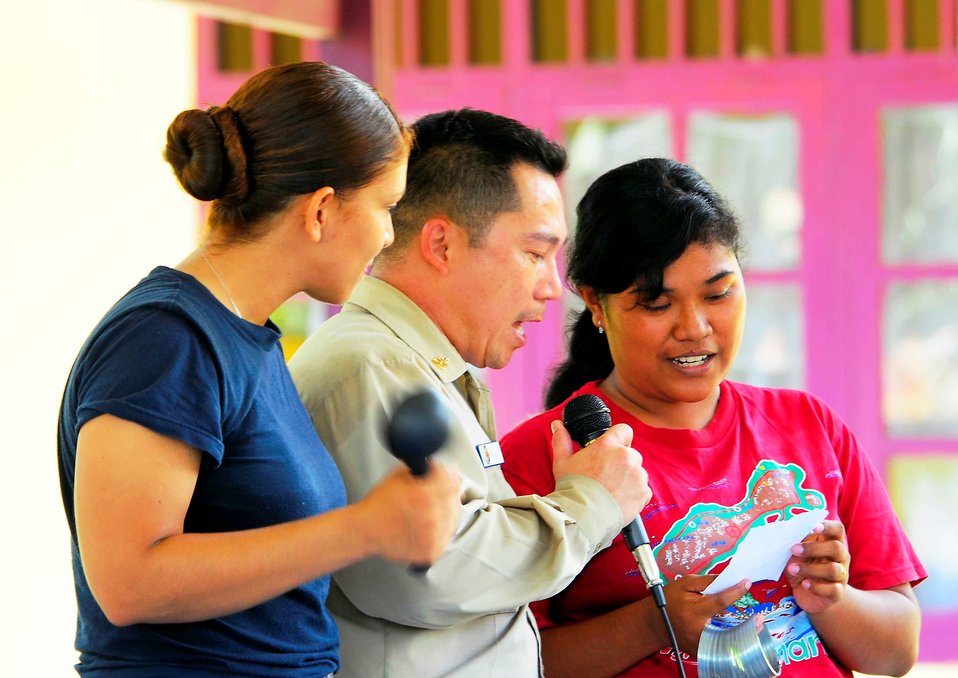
Senior Chief (SW/AW) Guy Gagui and Aviation Boatswain’s Mate Handling 1st Class (AW/SW) Yissel Castanon Sing an Indonesian Song With an Indonesian Girl

Senior Chief (SW/AW) Guy Gagui and Aviation Boatswain’s Mate Handling 1st Class (AW/SW) Yissel Castanon, both currently embarked aboard the Military Sealift Command hospital ship USNS Mercy (T-AH 19), sing an Indonesian song with a girl at the Rumah Sejahtera Bagi Anak Orphanage, during a community service event in support of Pacific Partnership 2010 in Tobelo, Indonesia, on July 14, 2010. Pacific Partnership 2010 is the fifth in a series of annual U.S. Pacific Fleet endeavors conducted in Indonesia as a disaster relief exercise to strengthen regional partnerships.